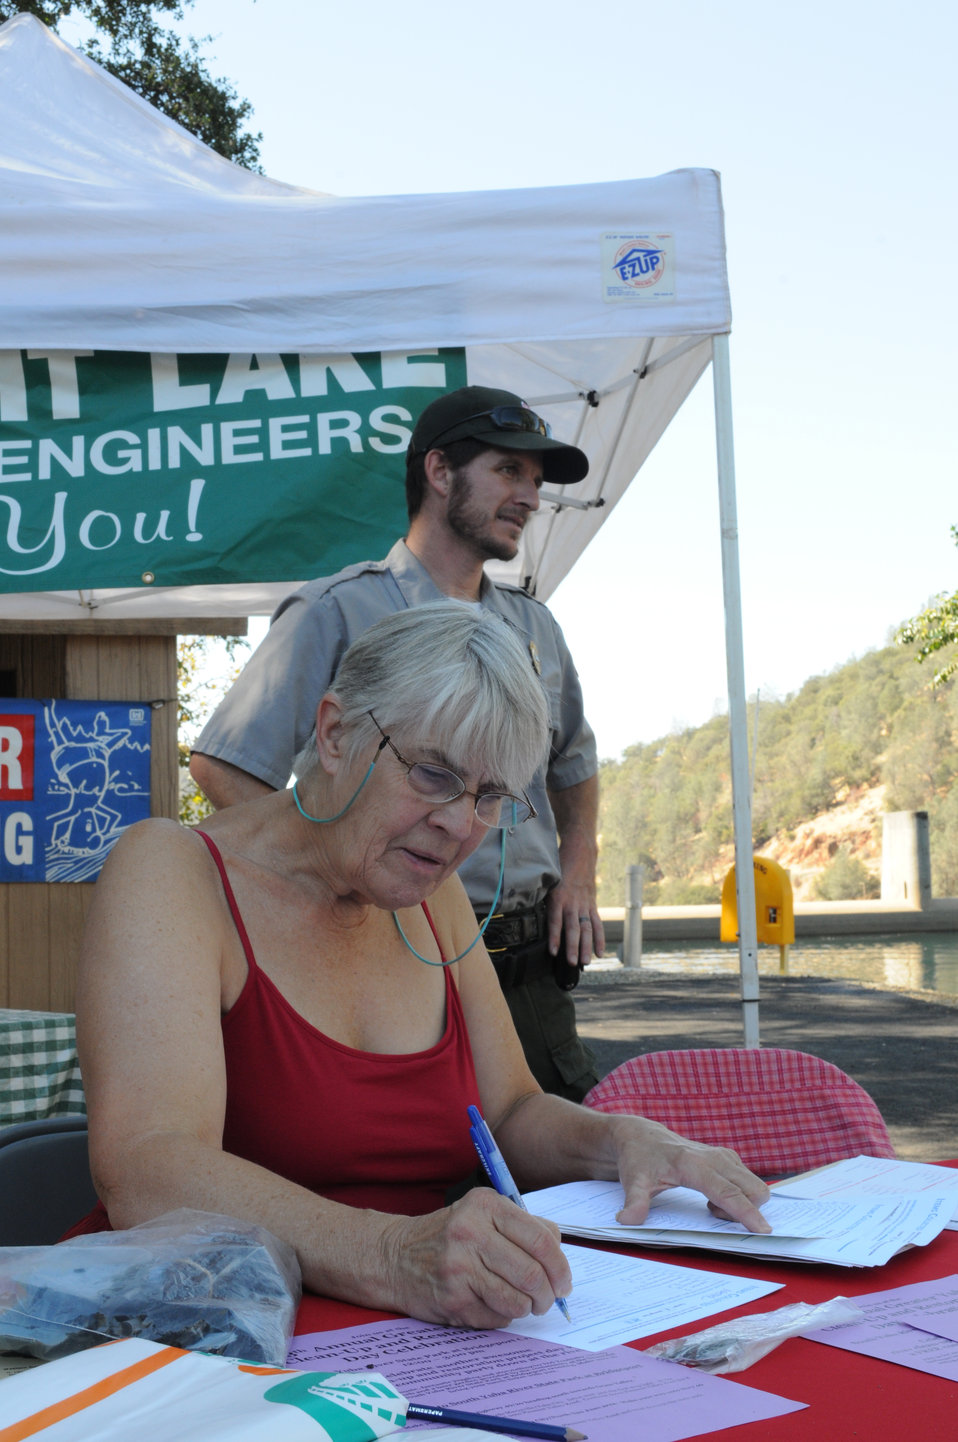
ENGLEBRIGHT LAKE, Calif. (Sept. 25, 2010) -- Volunteer Wendy Thibeault from the South Yuba River Citizens League tallies pounds of garbage during the 17th annual National Public Lands Day here Sept. 25. Park rangers from the U.S. Army Corps of Engineers Sacramento District and more than 55 volunteers celebrated the day with cleanup efforts, which yielded more than 300 pounds of trash. The Corps has been involved with National Public Lands Day since its inception in 1994 and has consistently been one of the largest providers of sites and volunteers participating in the event. This year, the celebration coincides with California Coastal Cleanup Day and President Barack Obama’s America’s Great Outdoors Initiative, an effort to promote the conservation of outdoor spaces and reconnect Americans to the outdoors.